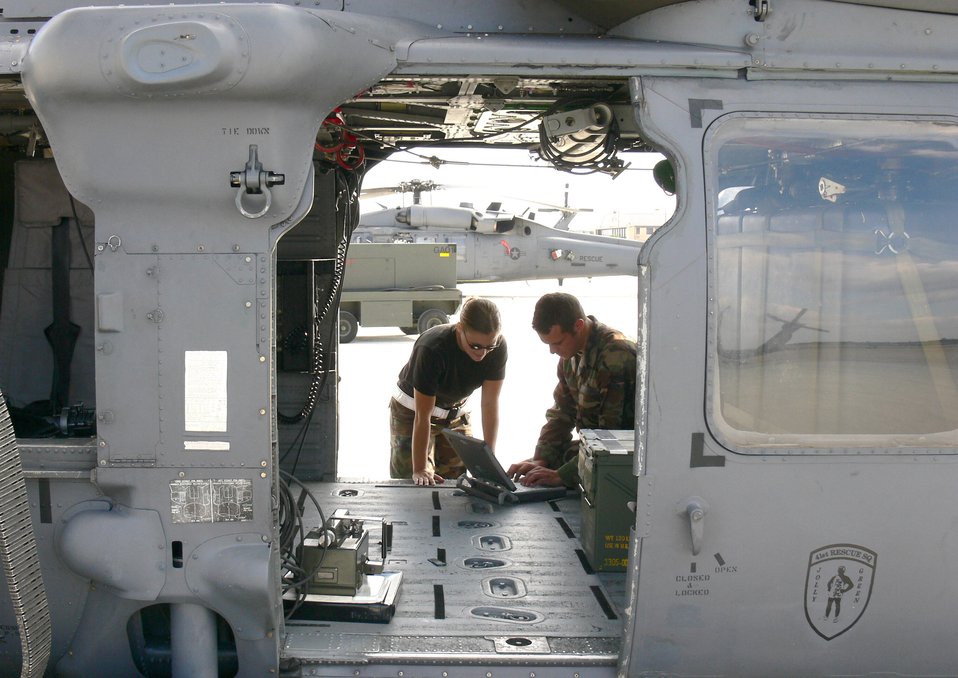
ACC assists maintainers with AFSO 21

Staff Sgt. Janell McGivern and Airman 1st Class Steven Symsick order parts via computer from within an HH-60G Pave Hawk helicopter Oct. 10 at Moody Air Force Base, Ga. These new procedures are designed to save Air Force resources and were the focus a recent five-day Rapid Improvement Event. The event featured a delegation of Air Combat Command facilitators who assisted maintenance leaders in applying Air Force Smart Operations 21 initiatives. Sergeant McGivern and Airman Symsick are assigned to the 723rd Aircraft Maintenance Squadron at Moody AFB.